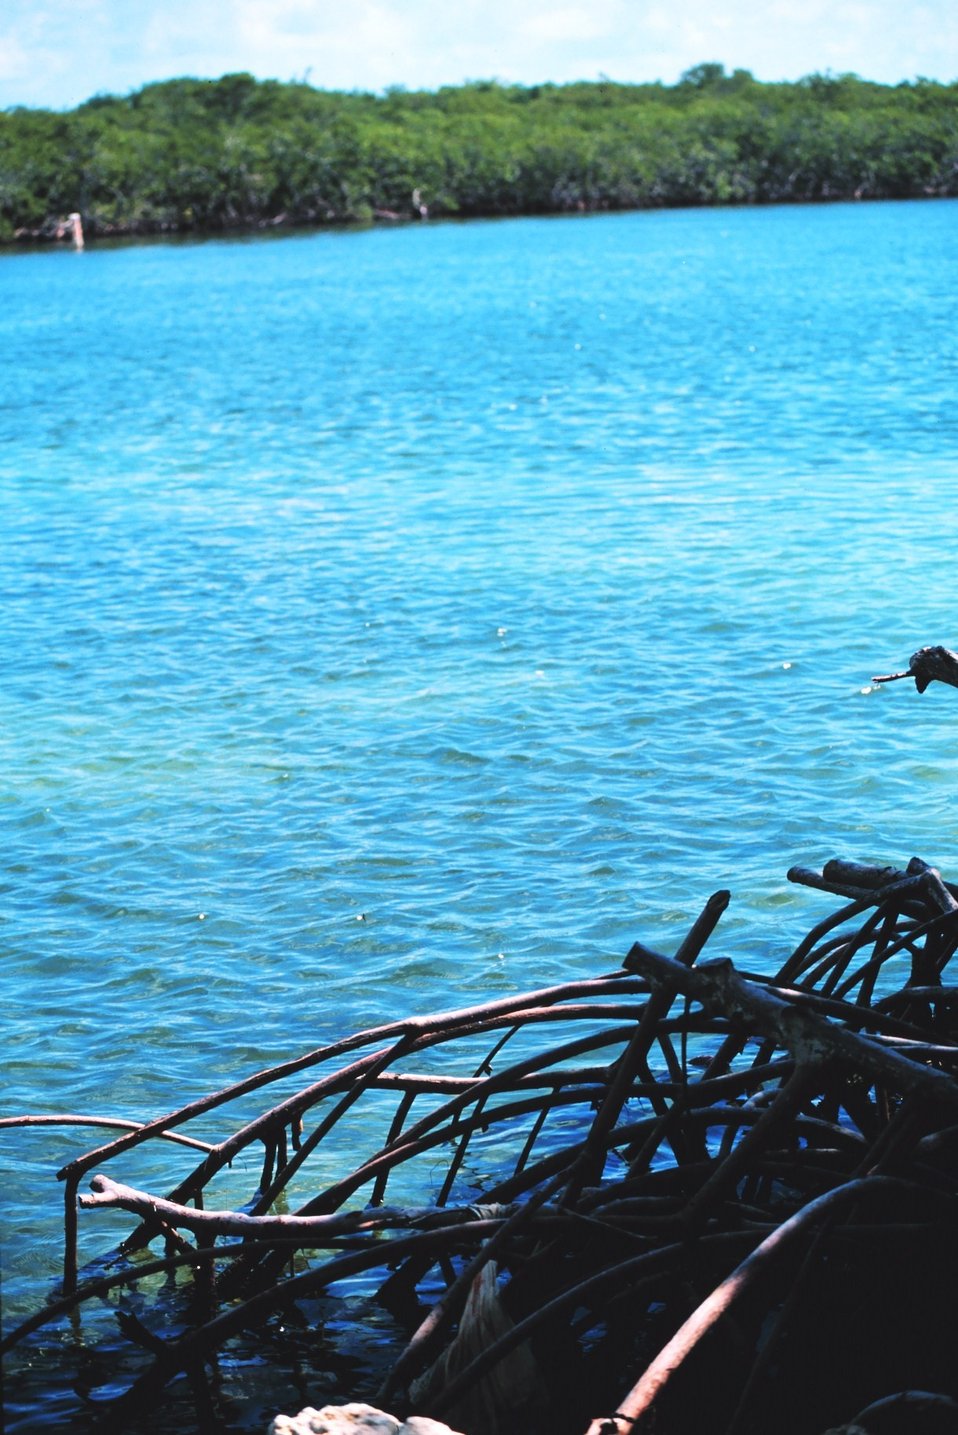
Mangrove roots